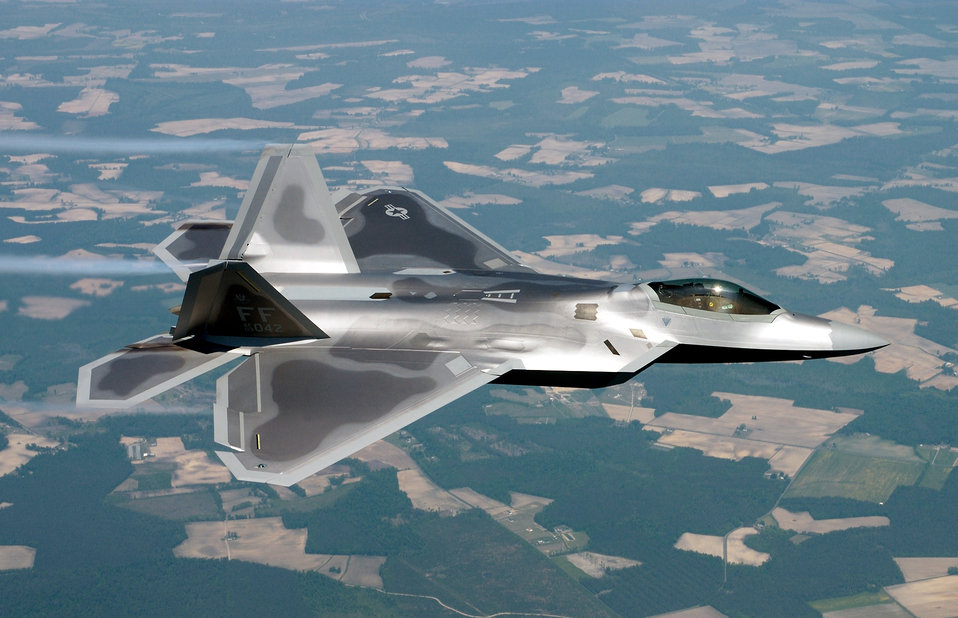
Raptor in flight

OVER VIRGINIA -- Lt. Col. James Hecker delivers the first operational F/A-22 Raptor to its permanent home at Langley Air Force Base, Va. Tail number 3042 marks the first of 26 Raptors to be delivered to the 27th Fighter Squadron.